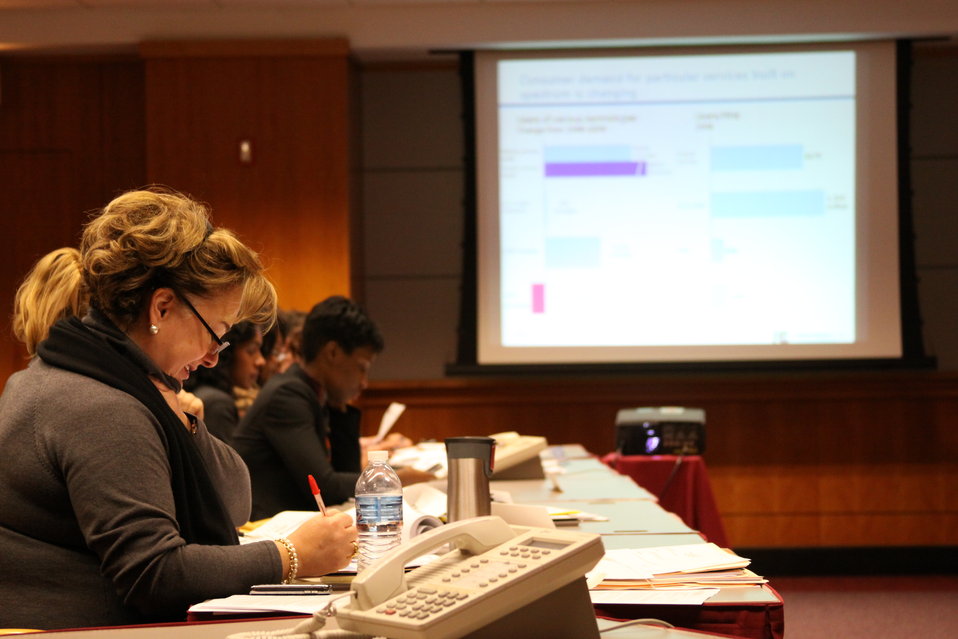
November Open Meeting